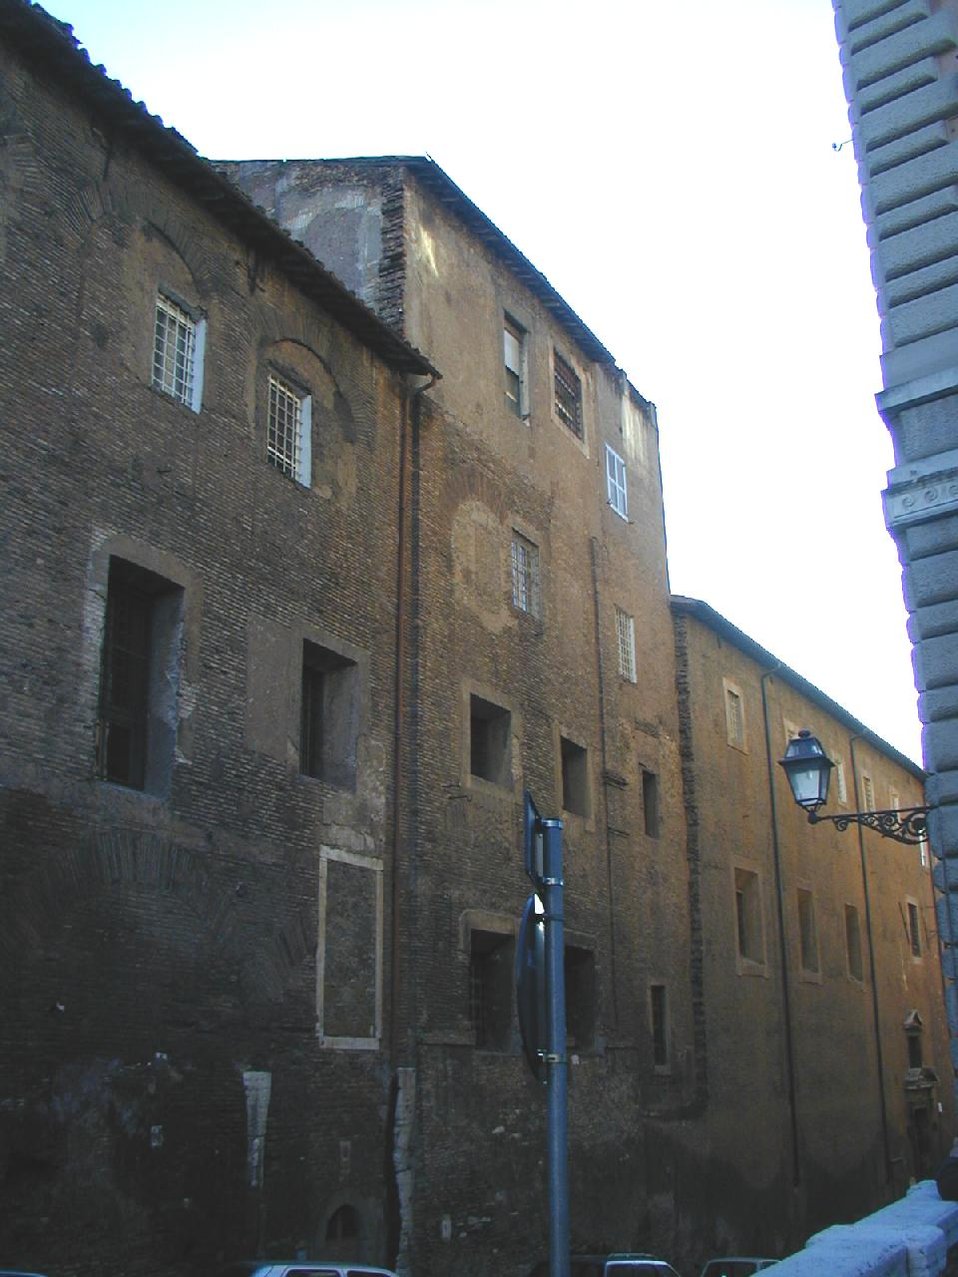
001126 1 via in selci 2